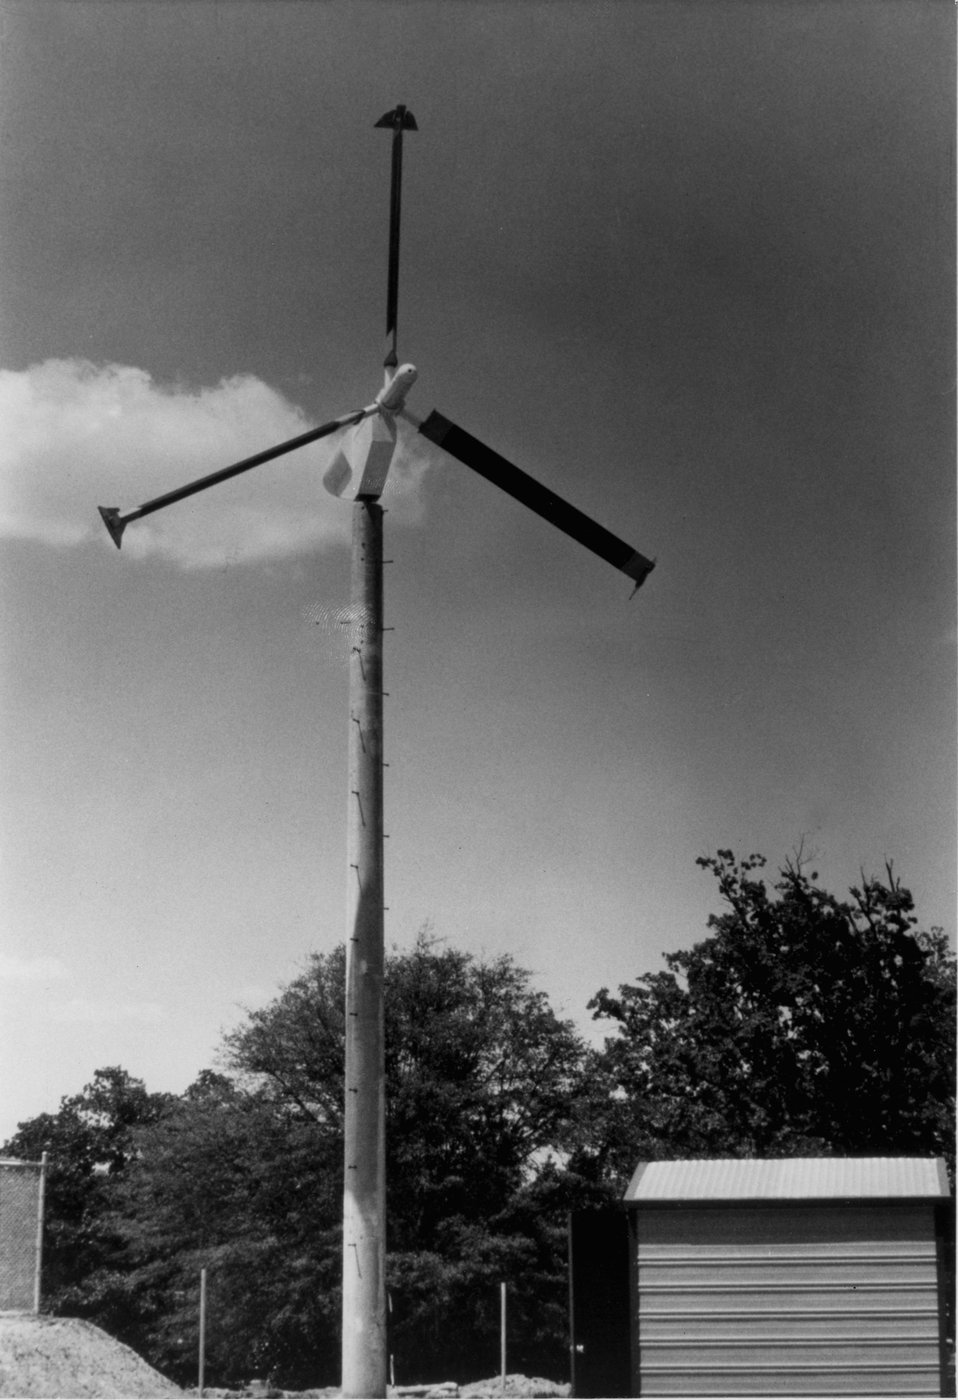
Wind generator installation at Georgia Tech. c. 1978